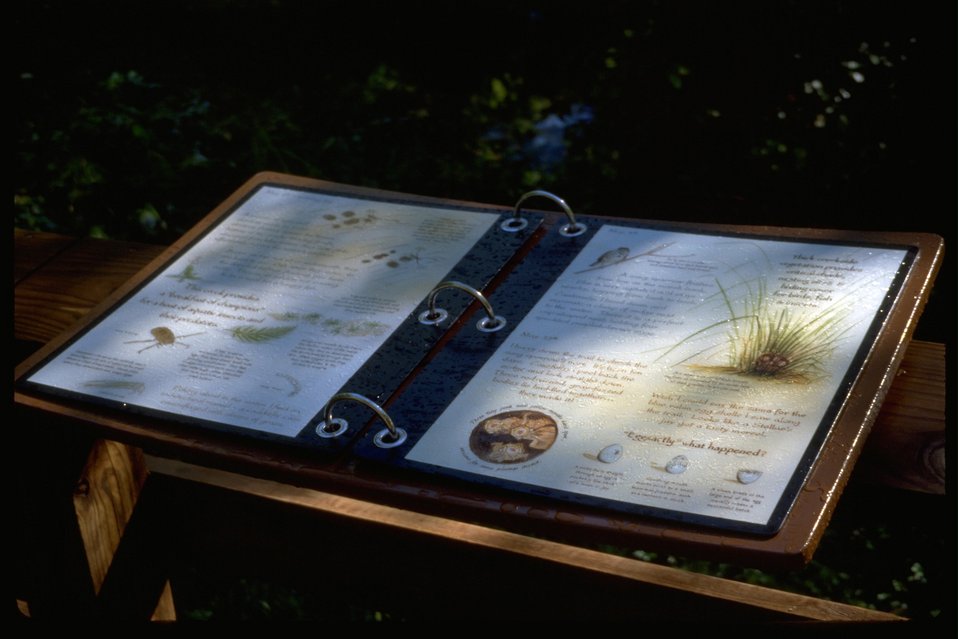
Interpretive Panels: Boardwalk Trail Journals.